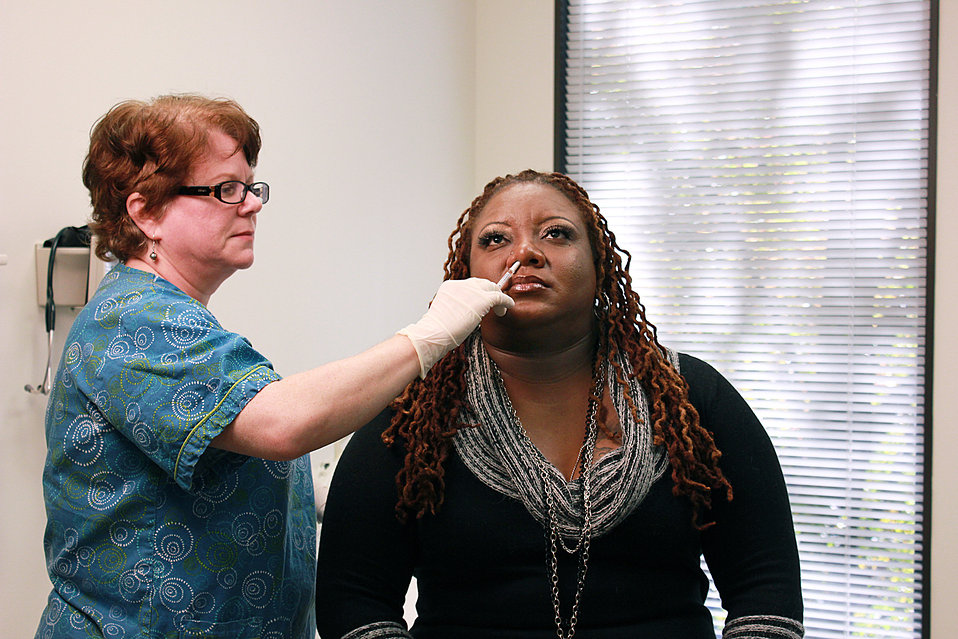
This image depicts a qualified nurse in a clinical setting, who was in the process of administering a dosage of FluMist� live attenuated intranasal vaccine LAIV) into the right nostril, and into this patient's nasal cavity. Note that the nurse's hands were gloved, thereby, avoiding the possibility of cross-contamination.